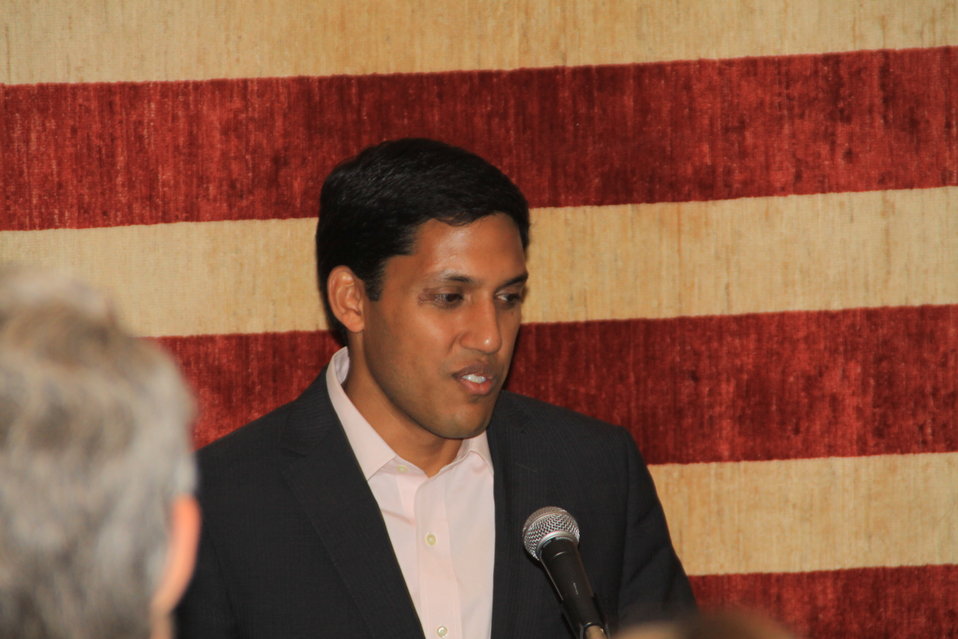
US Embassy Town Hall July 21, 2010